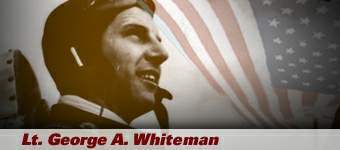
George Whiteman

2nd Lt. George A. Whiteman is the namesake for Whiteman Air Force Base, Mo.